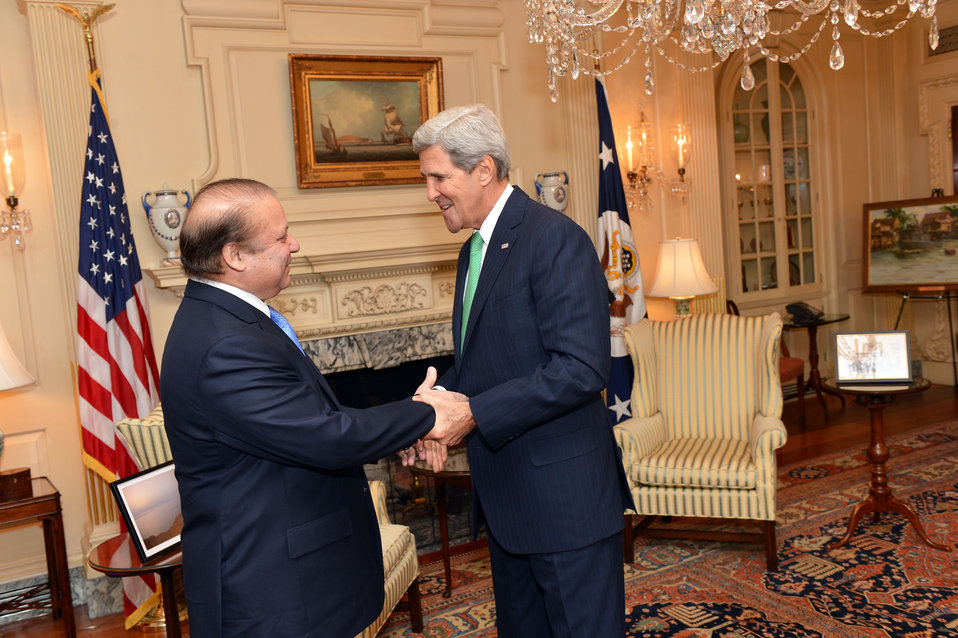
Secretary Kerry Greets Pakistani Prime Minister Sharif

U.S. Secretary of State John Kerry greets Pakistani Prime Minister Nawaz Sharif before their bilateral meeting at the U.S. Department of State in Washington, D.C., on October 20, 2013.